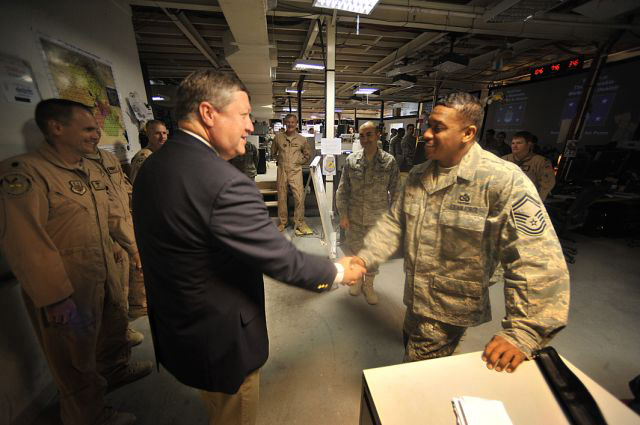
Secretary Donley visits the CAOC

Secretary of the Air Force meets Senior Master Sgt. Timothy Davis inside the Combined Air and Space Operations Center Oct. 11. The CAOC provides the command and control of airpower throughout Iraq, Afghanistan and 25 other nations, extending from Central Asia to the Horn of Africa.